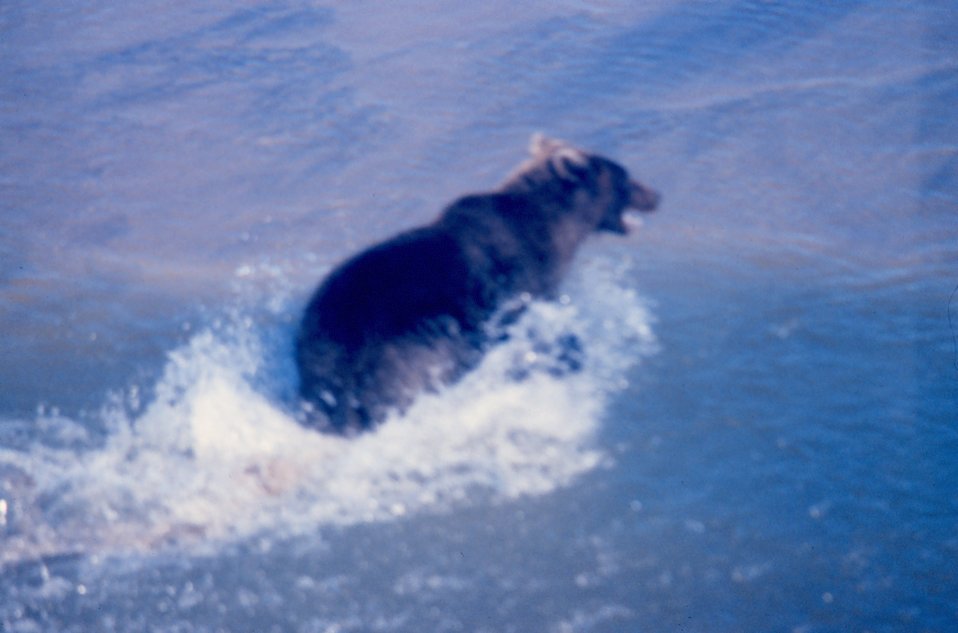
Brown bear - Ursus arctos - on the shore of the Beaufort Sea